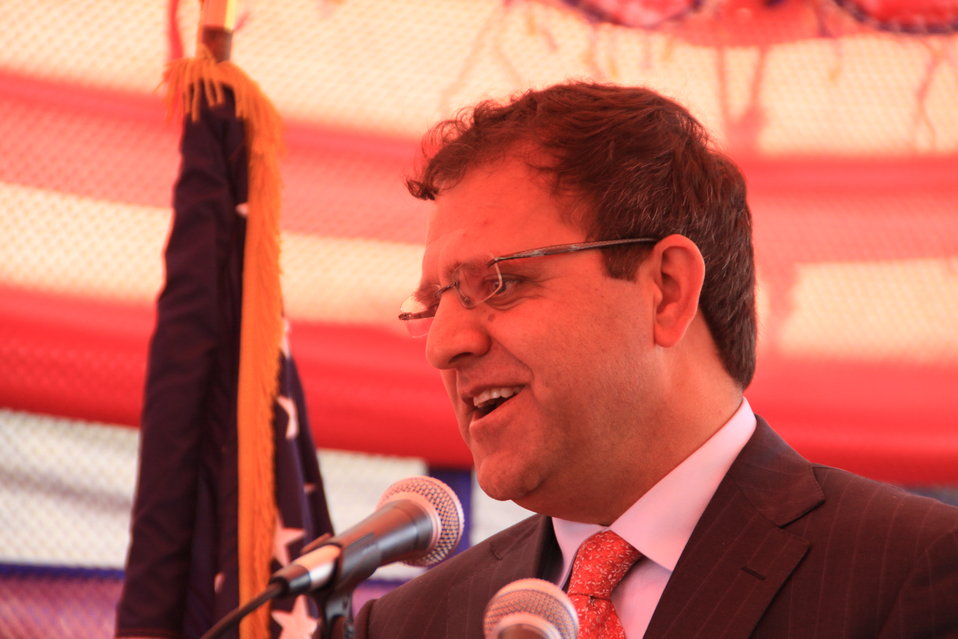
Baddam Bagh Farm